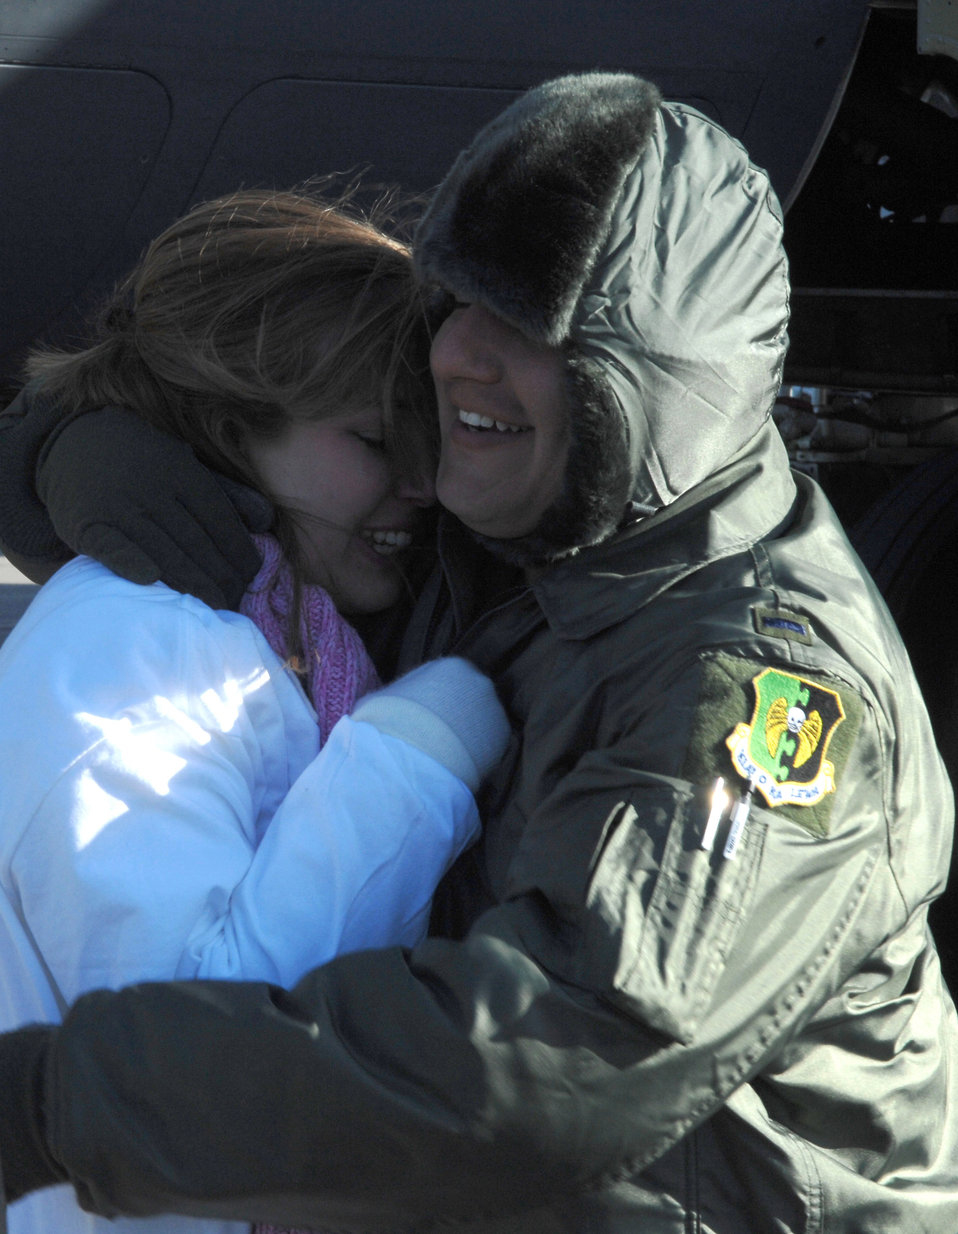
Minot Airmen return home from Andersen deployment

1st Lt. Patrick Godinez hugs his wife, Melissa, after returning Jan. 29 to Minot Air Force Base, N.D., from a deployment to Andersen AFB, Guam. Lieutenant Godinez and other Minot AFB Airmen were met by friends and family upon arriving home from a five-month deployment to Andersen AFB. He is assigned to the 23rd Bomb Squadron.